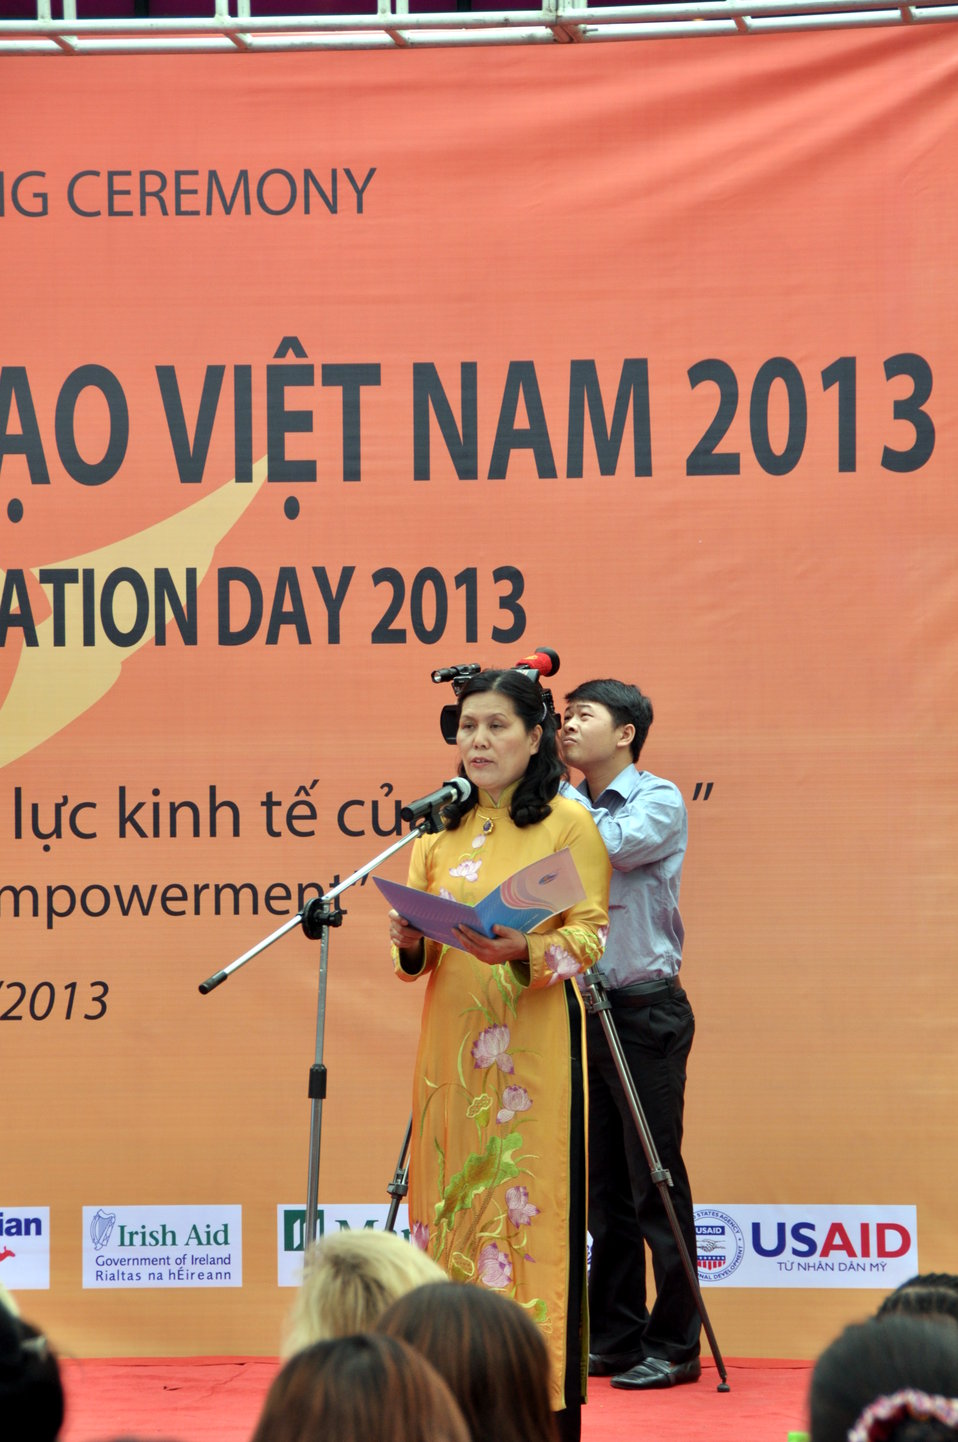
Vietnam Women’s Union President Nguyen Thi Thanh Hoa addresses the launching ceremony of Vietnam Women Innovation Day 2013

Hanoi, October 1, 2013.